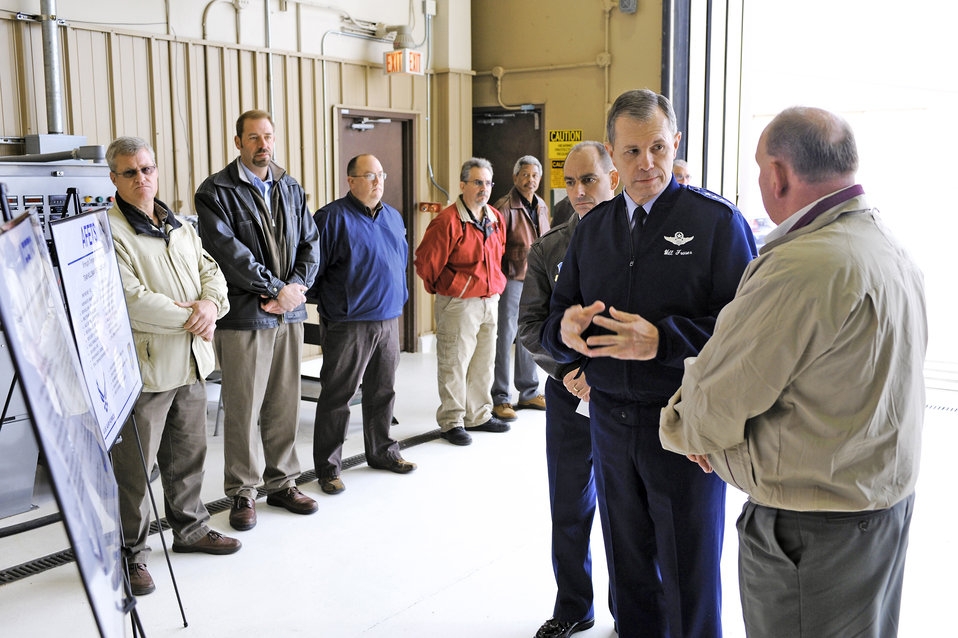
Air Combat Command leader visits Holloman Airmen

Gen. William M. Fraser III receives a briefing on the F-22 Raptor and its current status Feb. 22, 2010, at Holloman Air Force Base, N.M. General Fraser received briefings from many organizations around Holloman AFB during his tour. General Fraser is the commander of Air Combat Command.